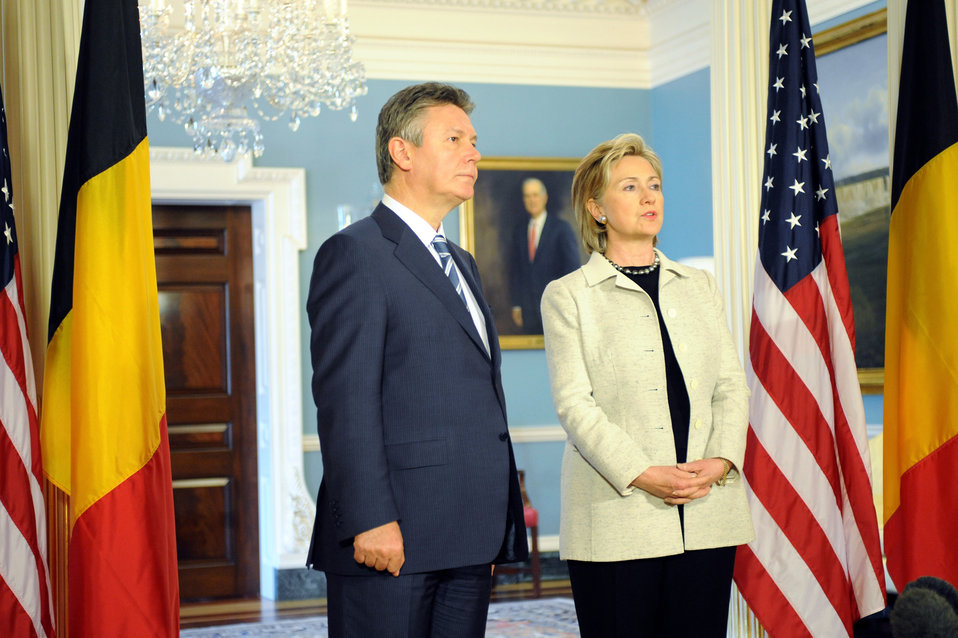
Secretary Clinton Meets With Belgian Prime Minister

U.S. Secretary of State Hillary Rodham Clinton hosts a bilateral meeting with Belgian Deputy Prime Minister Karel De Gucht in the Treaty Room of the U.S. Department of State in Washington, DC May 22, 2009.